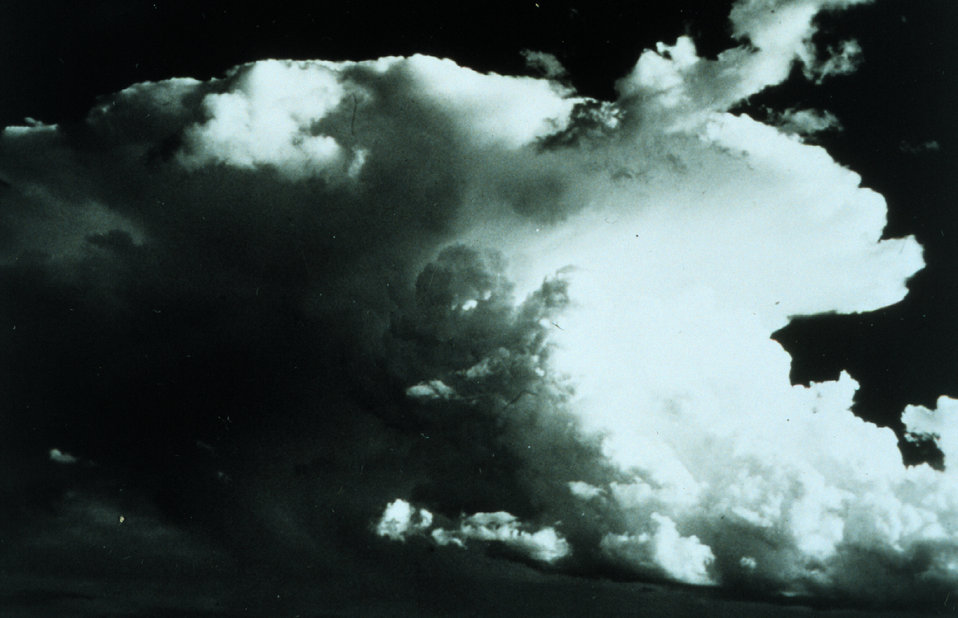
A towering cumulonimbus cloud with well-developed anvil shape